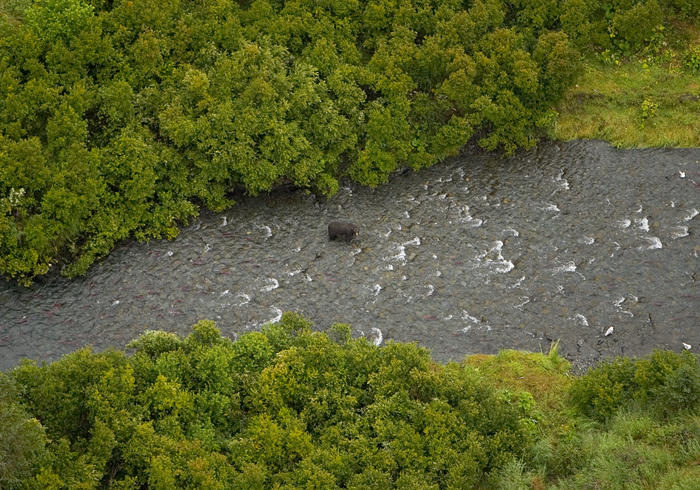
Black Bear in Russian River.